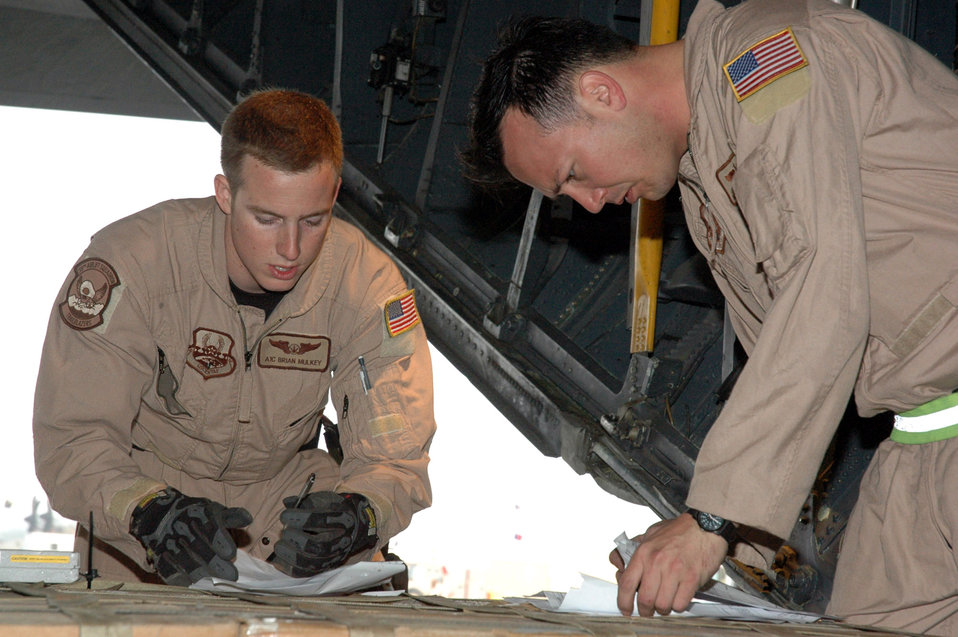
Loadmasters learn from mentors

Airman 1st Class Brian Mulkey and Master Sgt. James McElwee sign paperwork after loading a pallet of cargo Feb. 8 in Southwest Asia. The two loadmasters are assigned to the 746th Expeditionary Airlift Squadron.